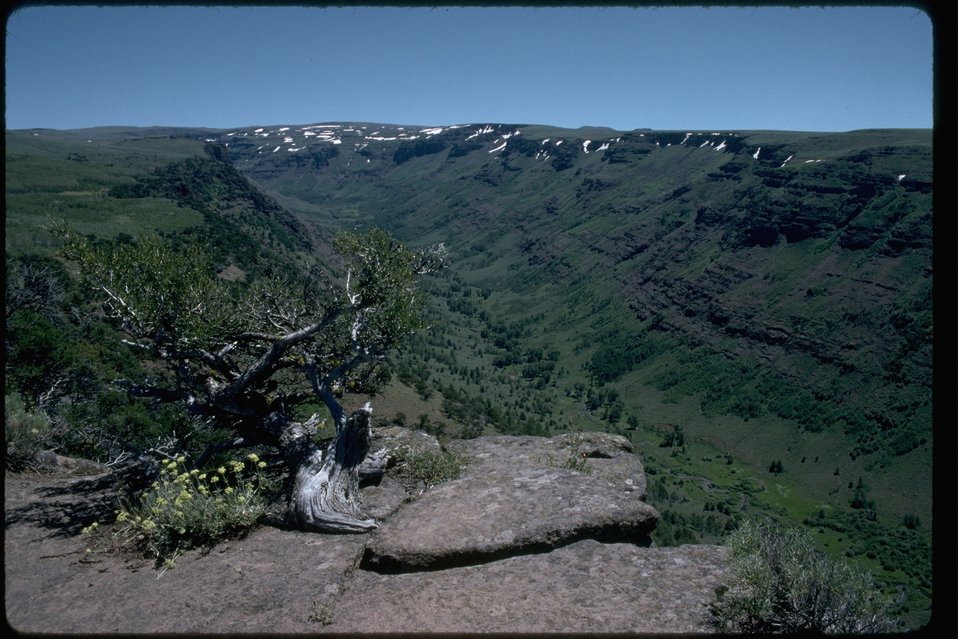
Little Blitzen Gorge, a glacial valley on Steens Mountain in Southeast Oregon.